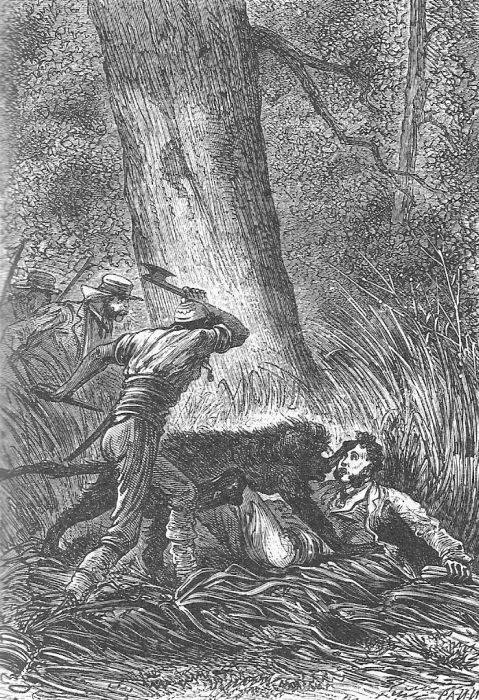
An illustration from Jules Verne's novel 'The Adventures of Three Englishmen and Three Russians in South Africa' (1870) drawn by Jules Férat. Polski: Ilustracja powieści Juliusza Verne'a 'Przygody trzech Rosjan i trzech Anglików w południowej Afryce' (1870) autorstwa Julesa Férata. Français : Jules Verne: 'Aventures de trois russes et de trois anglais dans l’Afrique australe' (1870), dessins par Jules Férat.